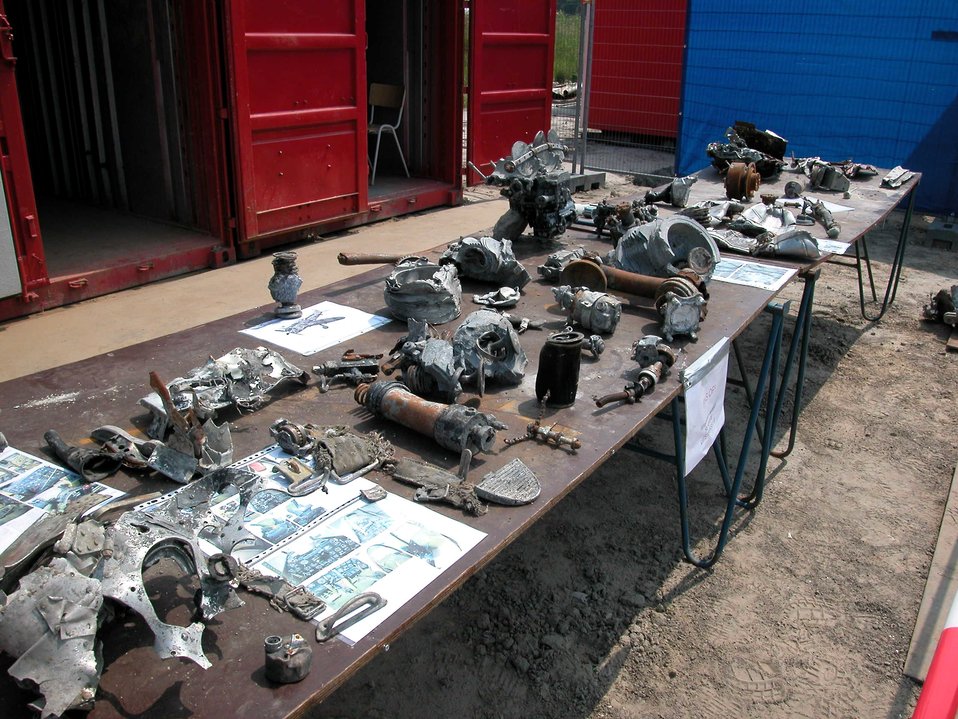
Army Air Force P-47 recovered in the Netherlands

Dutch workmen stumbled across the wreckage of a U.S. World War II plane in April during a survey to establish a new industrial site. The aircraft wreckage pictured here was excavated by the Royal Netherlands Air Force and local authorities near the village of Oude-Tonge. It was identified as a U.S. Army Air Forces P-47 Thunderbolt that crashed in 1943 while escorting the withdrawal of allied bombers from a raid on the German city of Emmerich.